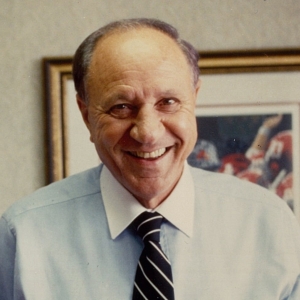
en:Herman Maisel pictured in his office on Moffet Road